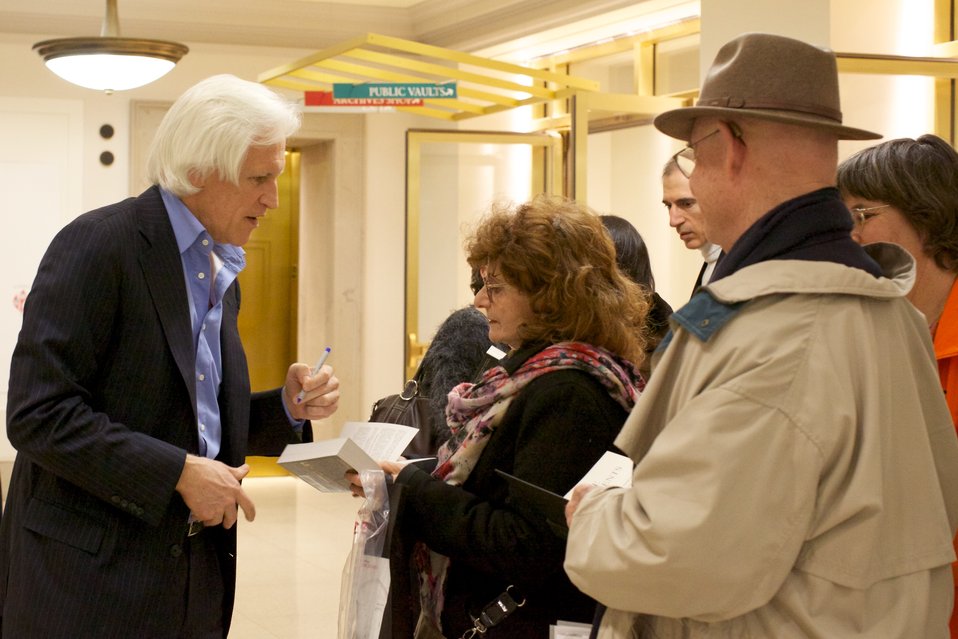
The Monuments Men; Robeert Edsel (left), greets and autographs books for lecture attendees